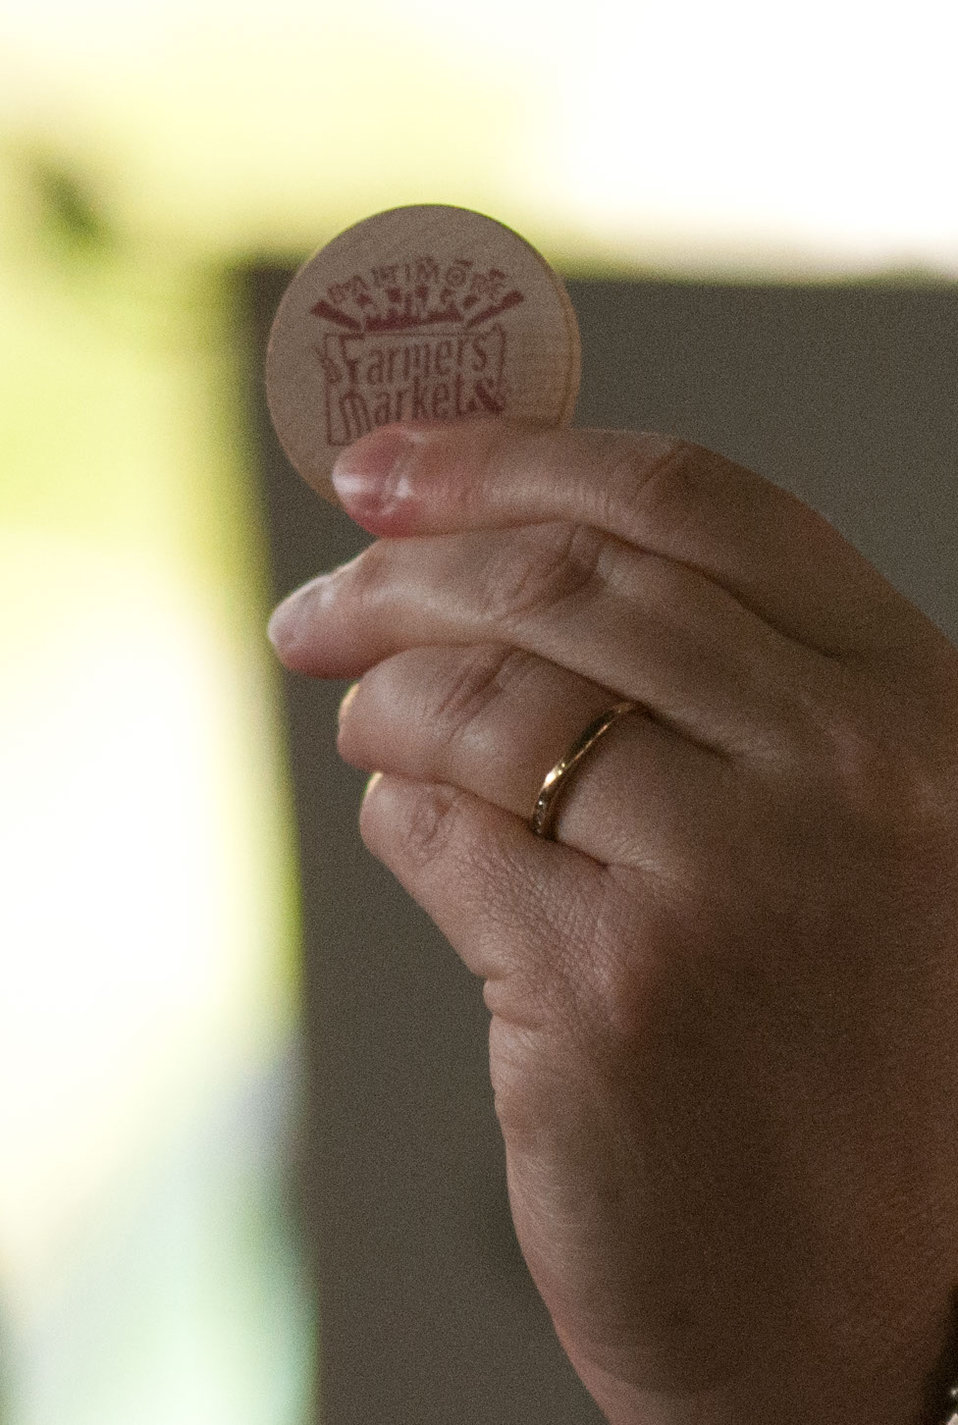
Agriculture Deputy Secretary Kathleen Merrigan holds up a wooden token at the opening of Baltimore's Farmers Market and Bazaar in Baltimore, MD on Sunday, July 8, 2012. Using a new wireless connected electronic card reader consumers can now use the U.S. Department of Agriculture’s (USDA) Food Nutrition Service’s (FNS) Supplemental Nutrition Assistance Program (SNAP) Electronic Benefits Transfer (EBT) cards, Baltimore Bucks, and debit cards to purchase these wooden tokens. The U.S. Department of Agriculture, Kaiser Permanente of the Mid-Atlantic States, Abell Foundation, the Harry and Jeanette Weinberg Foundation, the Baltimore Community Foundation, Maryland Hunger Solutions, the Maryland Department of Agriculture Baltimore Office of Promotions and the Arts, and Department of Social Services are participating partners in the farmers market.